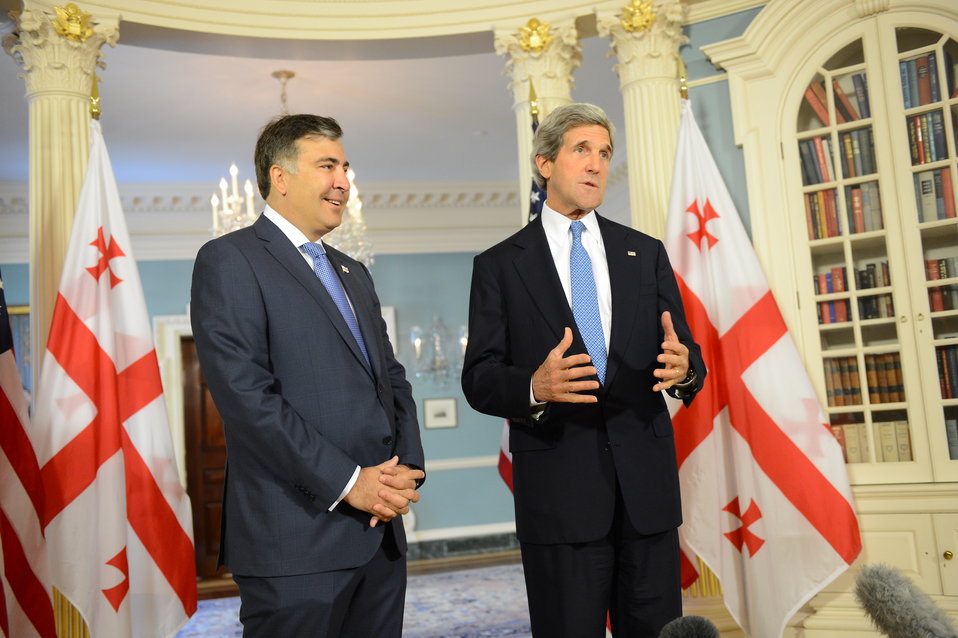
Secretary Kerry Meets With Georgian President Saakashvili

U.S. Secretary of State John Kerry meets with Georgian President Mikheil Saakashvili at the U.S. Department of State in Washington, D.C., on May 1, 2013.